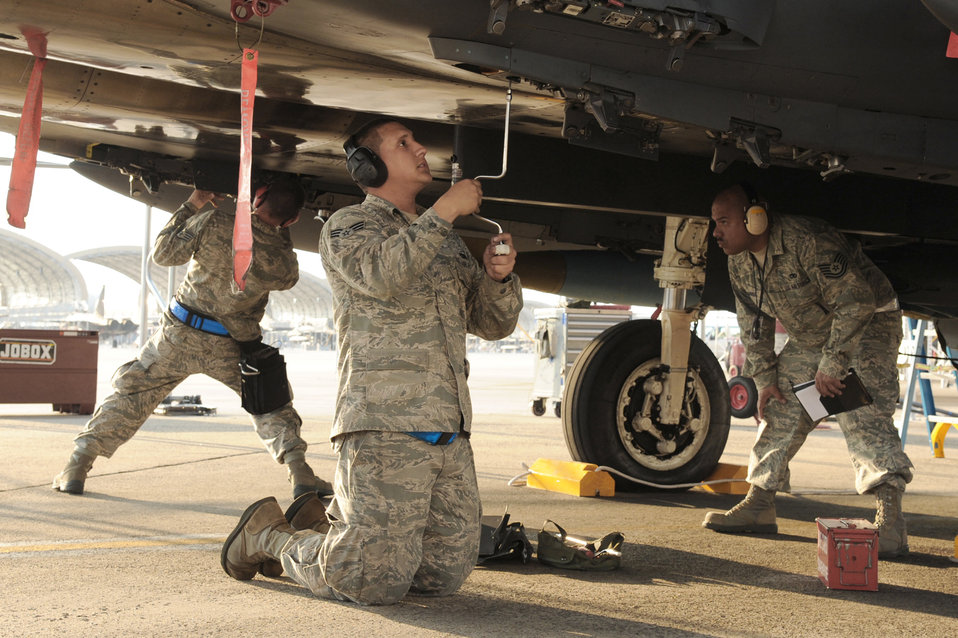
Weapons load competition

Members of the 4th Aircraft Maintenance Squadron perform maintenance operations during a weapons load competition May 25, 2011, at Seymour Johnson Air Force Base, N.C.